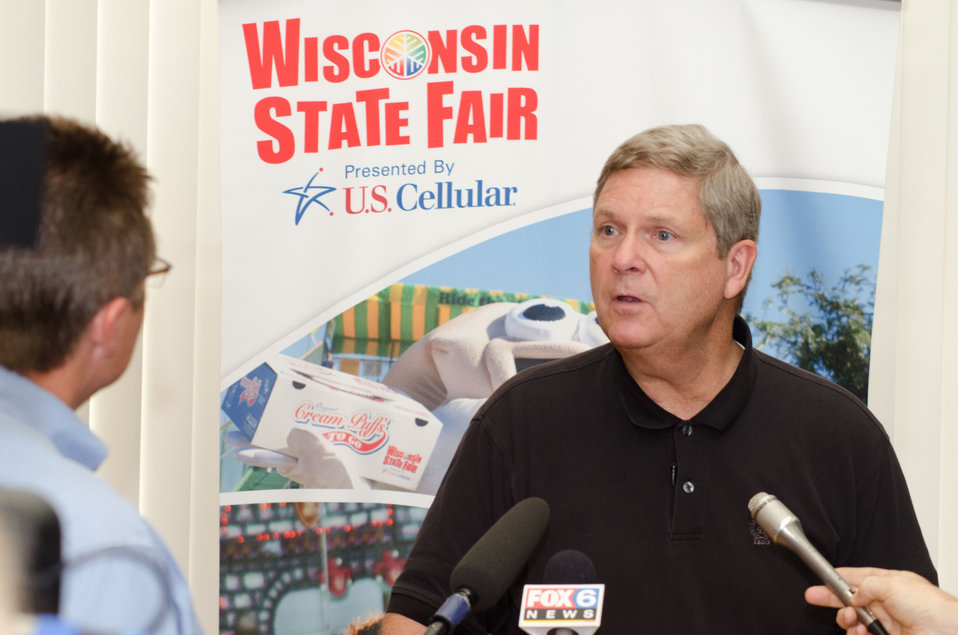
Agriculture Secretary Tom Vilsack speaking with members of the press at the Wisconsin State Fair Grounds, Exposition Center in West Allis, WI, on Thursday, August 4, 2011.